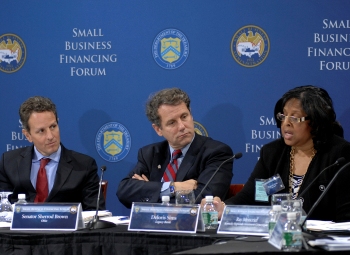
Treasury and SBA Host a Small Business Financing Forum

Delores Sims of Legacy Bank shared her story with Secretary Geithner and Senator Sherrod Brown (D-OH).